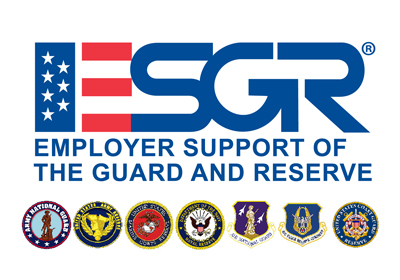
ESGR

Guardsmen and Reservists: Nominate your employer for the 2010 Secretary of Defense Employer Support Freedom Award. The 2010 nomination season has commenced and will close Jan. 18.